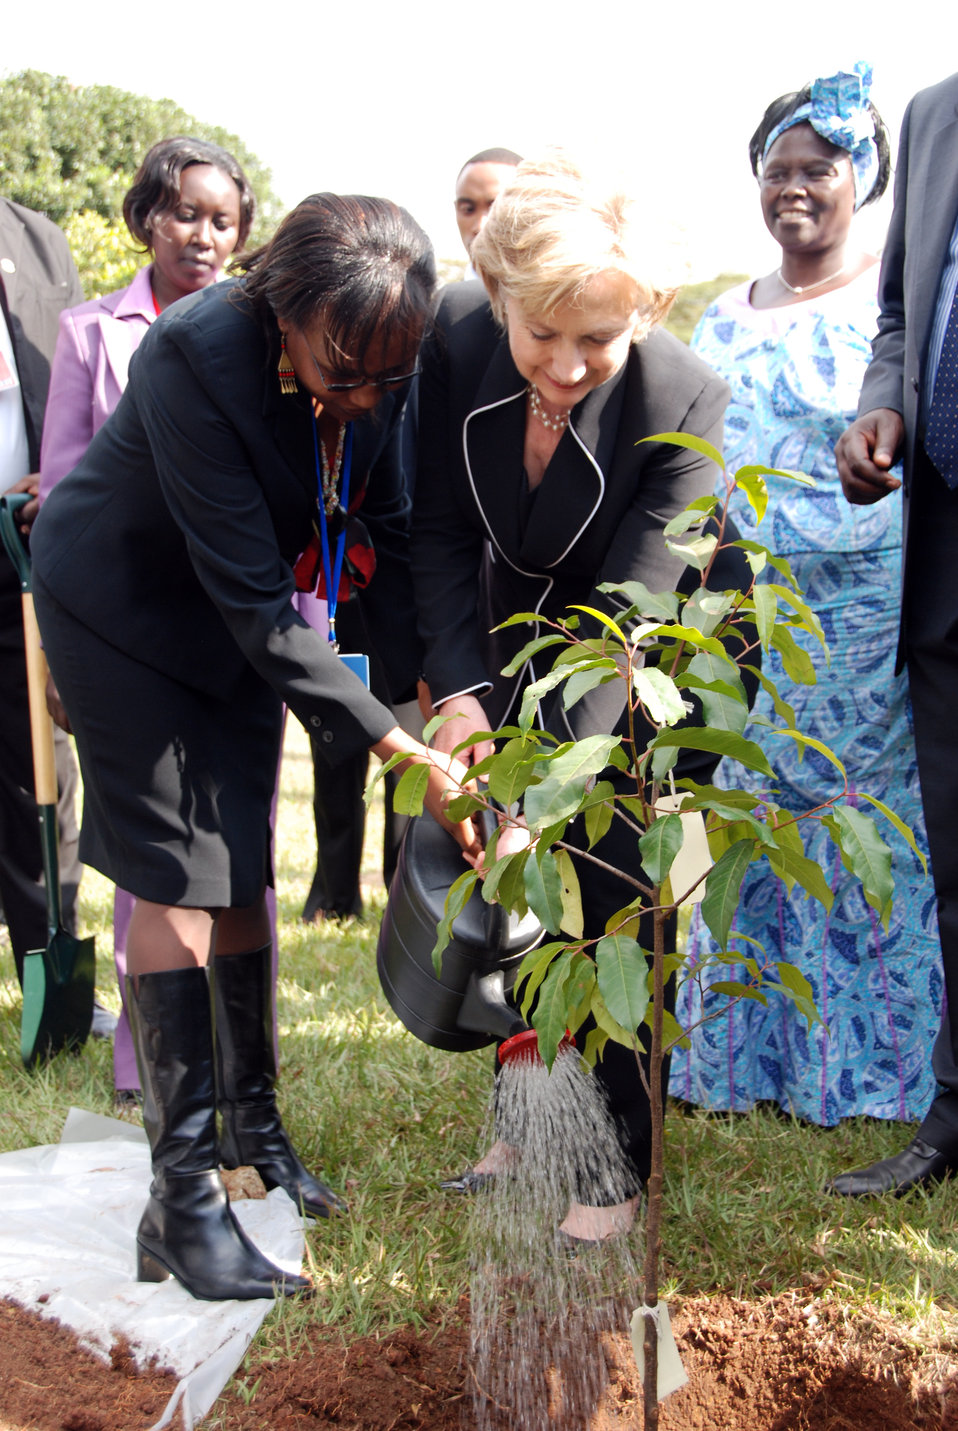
Secretary Clinton Visits Kenyan Agricultural Research Institute

U.S. Secretary of State Hillary Rodham Clinton plant a tree during a tour of the Kenyan Agricultural Research Institute (KARI) near Nairobi, Kenya August 5, 2009.